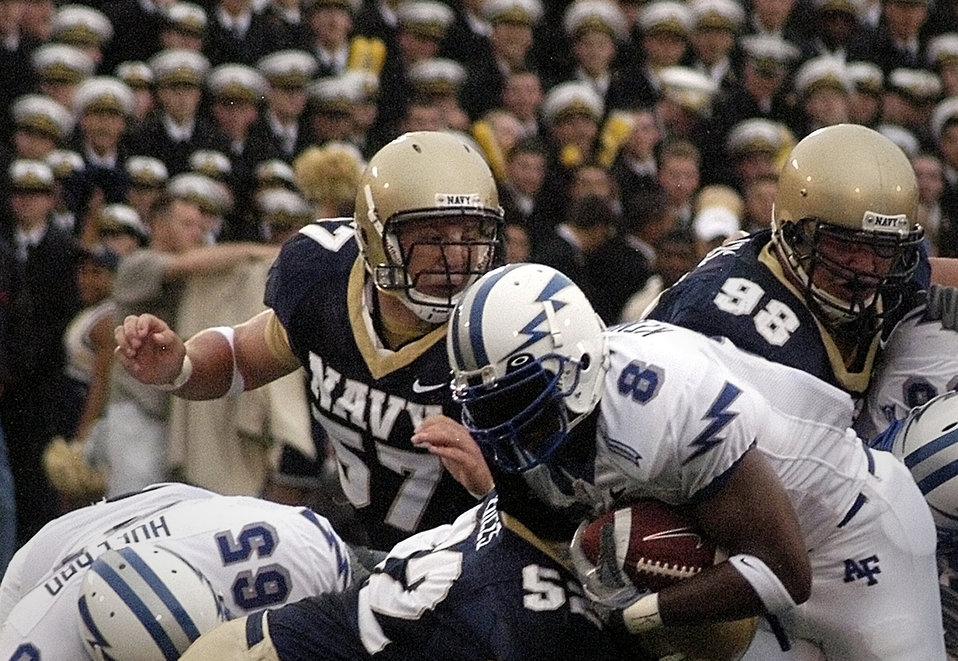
Midshipmen cage Falcons, 27-24

ANNAPOLIS, Md. -- Falcon fullback Jacobe Kendrick pushes his way forward for extra yardage after being wrapped up by Navy linebacker Jake Biles. Navy defeated Air Force 27-24.